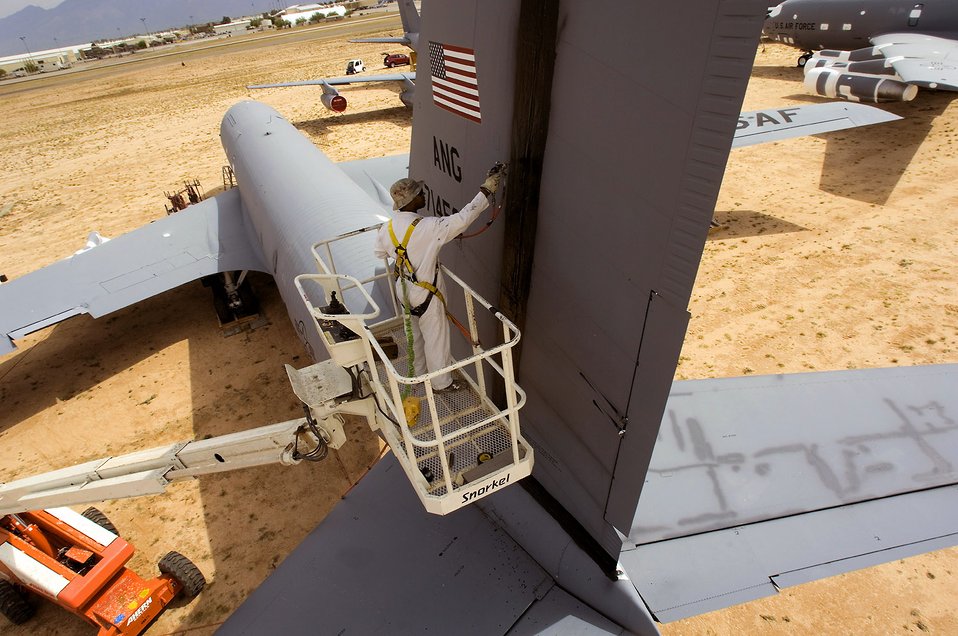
KC-135 Stratotanker

Juan Thomas sprays a protective sealant on the tail of a KC-135E Stratotanker to prepare the aircraft for storage and preservation at the Aerospace Maintenance and Regeneration Group storage site at Davis Monthan Air Force Base, Ariz. AMARG's mission has evolved beyond merely the storage and preservation of aircraft. Today the center provides customer services including aircraft regeneration which means restoring aircraft to flying status, limited depot-level maintenance, parts reclamation, historic storage and disposal functions.